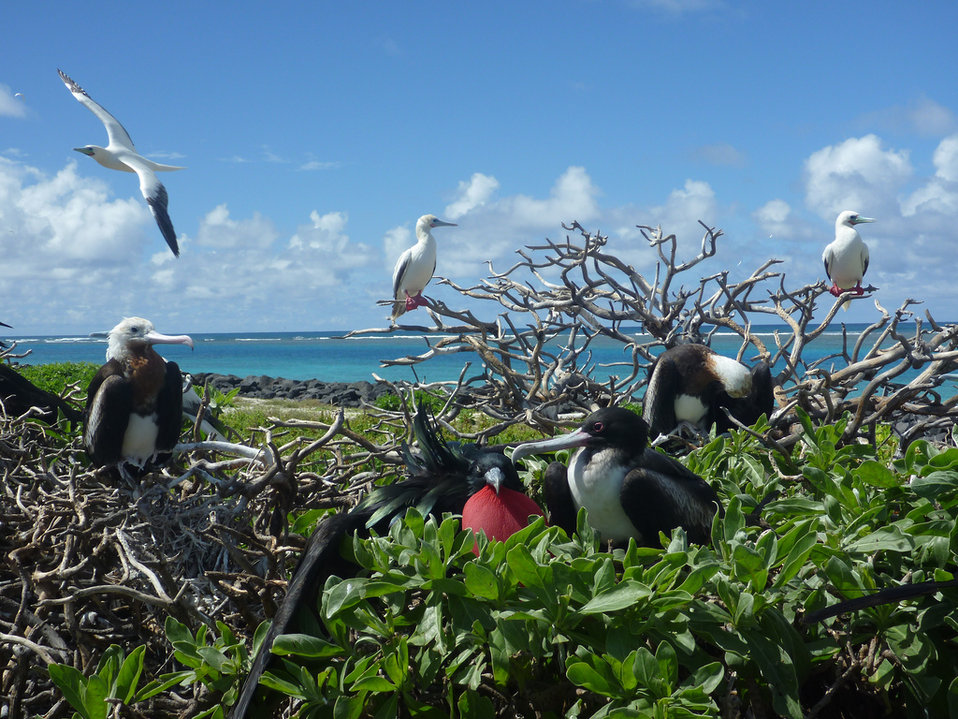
great frigatebirds and red-footed boobies

French Frigate Shoals, Hawaiian Islands National Wildlife Refuge, Papahānaumokuākea Marine National Monument